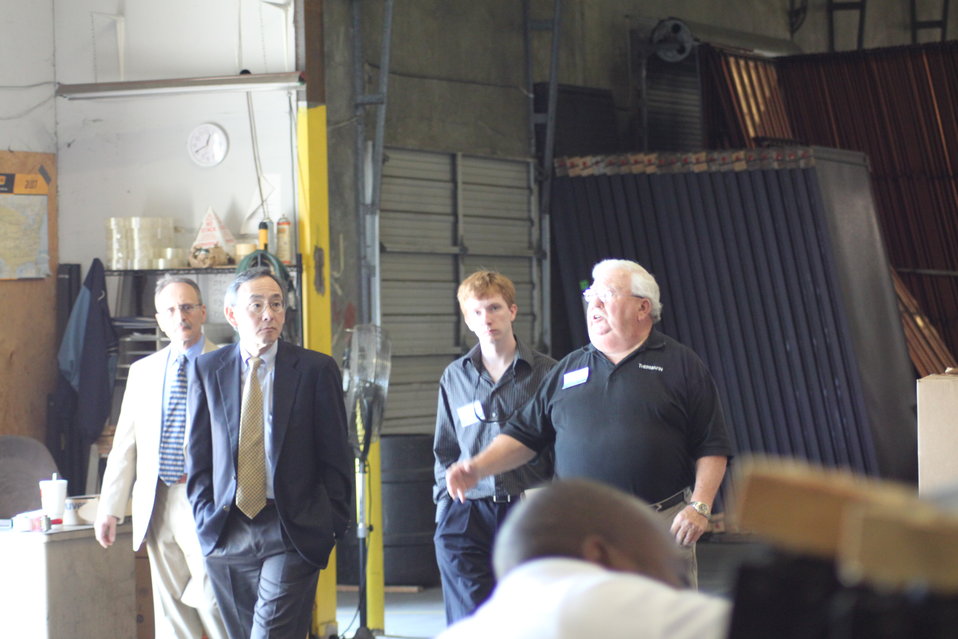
Norm 049